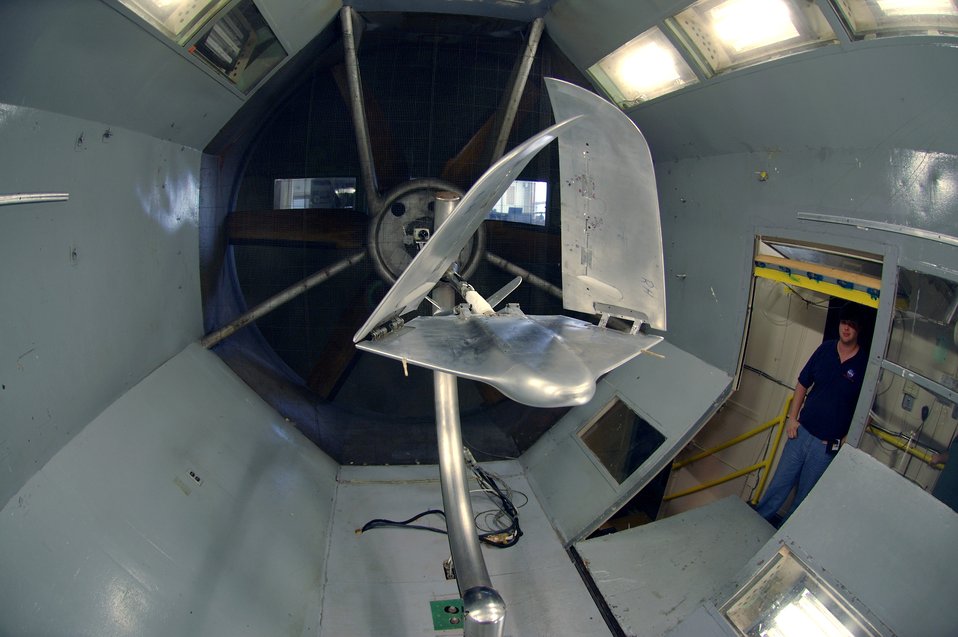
Into space

LANGLEY AIR FORCE BASE, Va. (AFPN) -- Steven Riddick glances at the aerial regional-scale environmental survey of Mars airplane during a break from testing at NASA's 12-foot low-speed tunnel here. Mr. Riddick is an aerospace technology engineer who is part of the National Aeronautics and Space Administration wind tunnel team. The airplane is being tested for its stability in various wind conditions and validation of its aerodynamics.